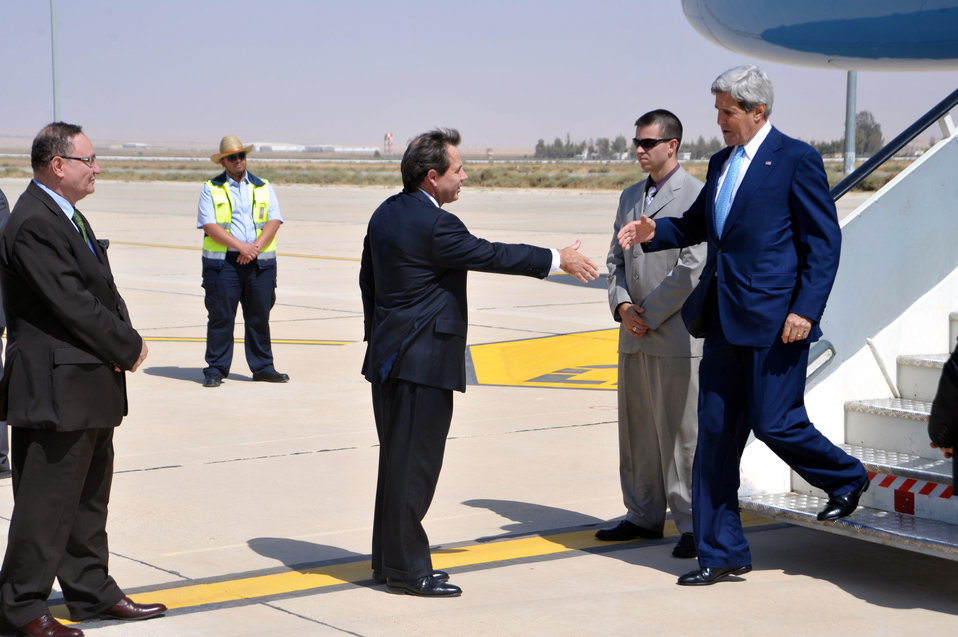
Secretary Kerry Is Greeted By Ambassador Jones

U.S. Secretary of State John Kerry is greeted by U.S. Ambassador to Jordan Stuart E. Jones as he arrives in Amman, Jordan, for meetings with government officials, Arab leaders, and Palestinian Authority President Mahmoud Abbas on July 16, 2013.